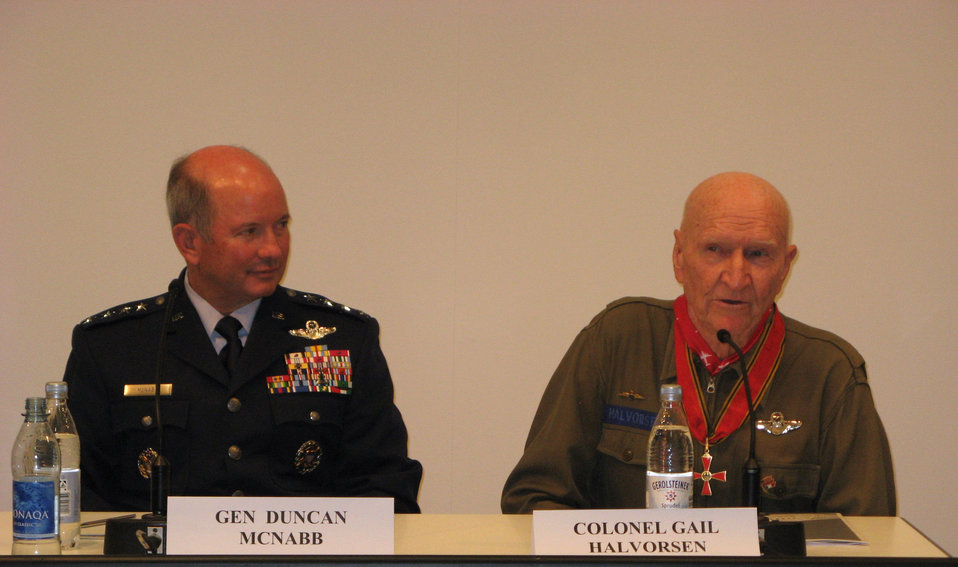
60th Anniversary of the Berlin Airlift

Gen. Duncan J. McNabb, Air Force vice chief of staff, and retired Col. Gail Halvorsen, the famed Berlin Airlift candy bomber, participate in a panel discussion in Berlin May 27 commemorating the 60th anniversary of the Berlin Airlift.